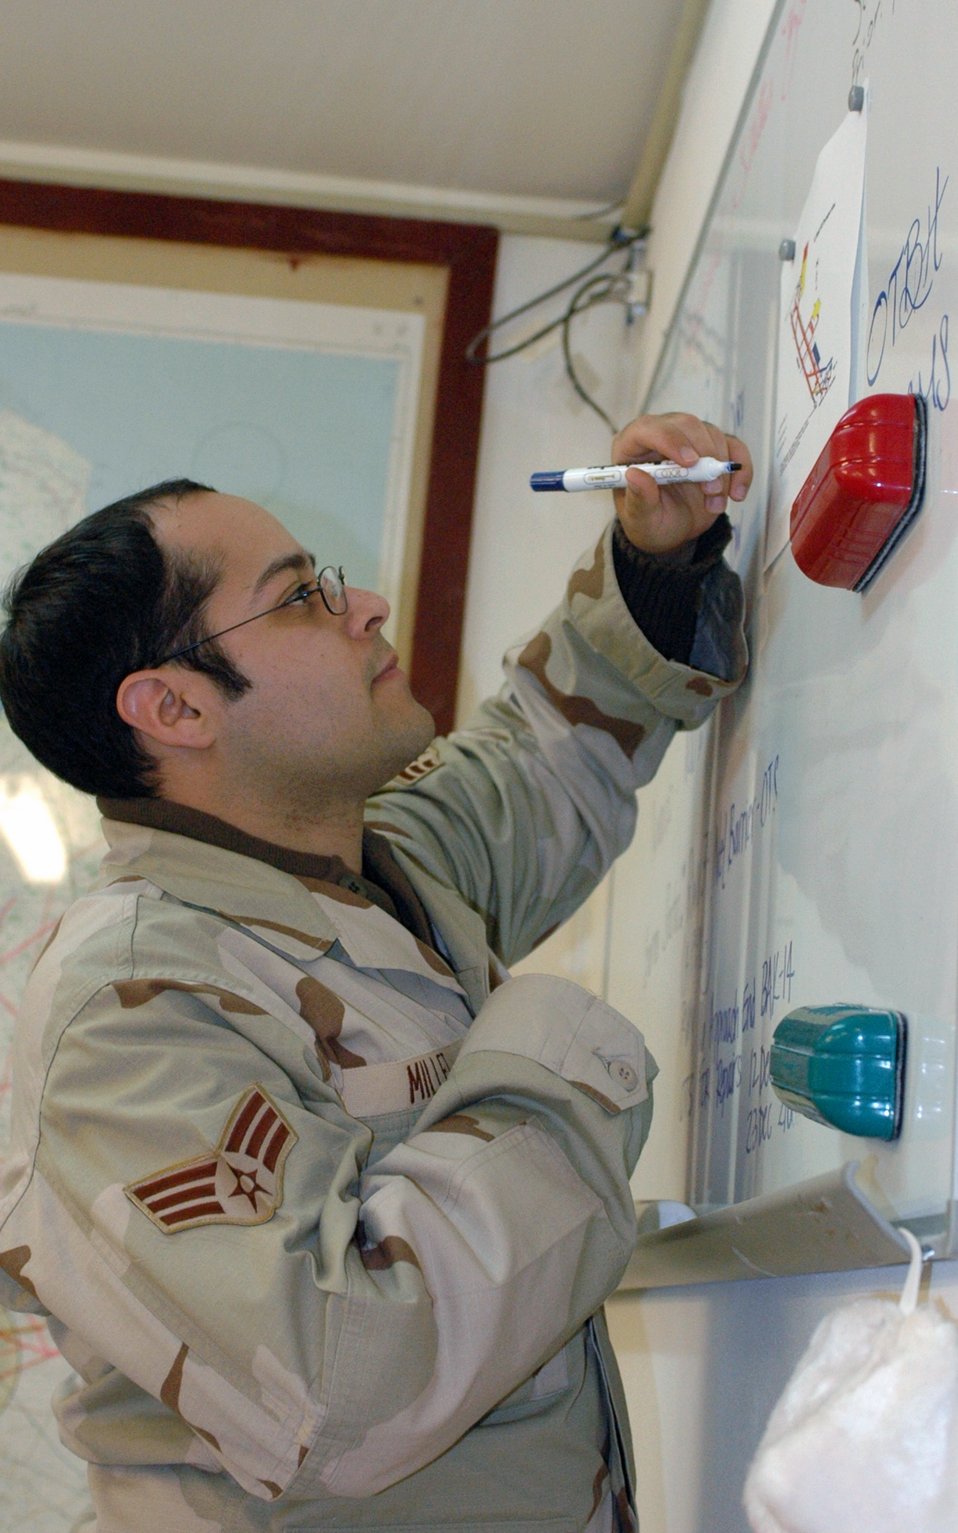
379th Airfield Management keeps aircraft, personnel safe

Senior Airman Angel Millet updates the active runway on the airfield status board, which is used to track important airfield information such as the active runway, bird watch condition and barrier status. Airman Millet is an airfield management operations supervisor assigned to the 379th Expeditionary Operations Support Squadron and deployed from Cannon Air Force Base, N.M.